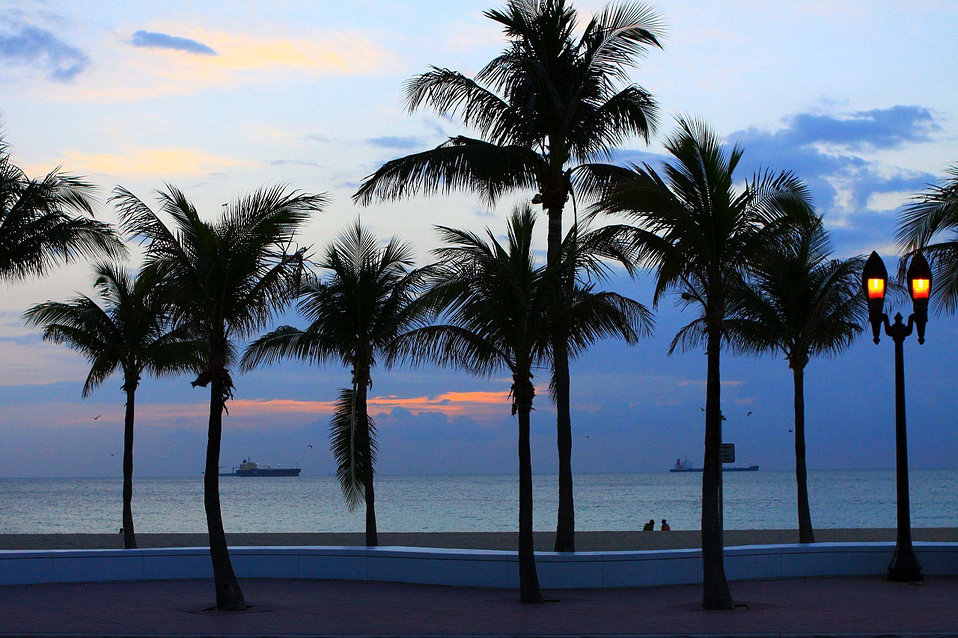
Dawn

Ft lauderdale beach at daybreak.